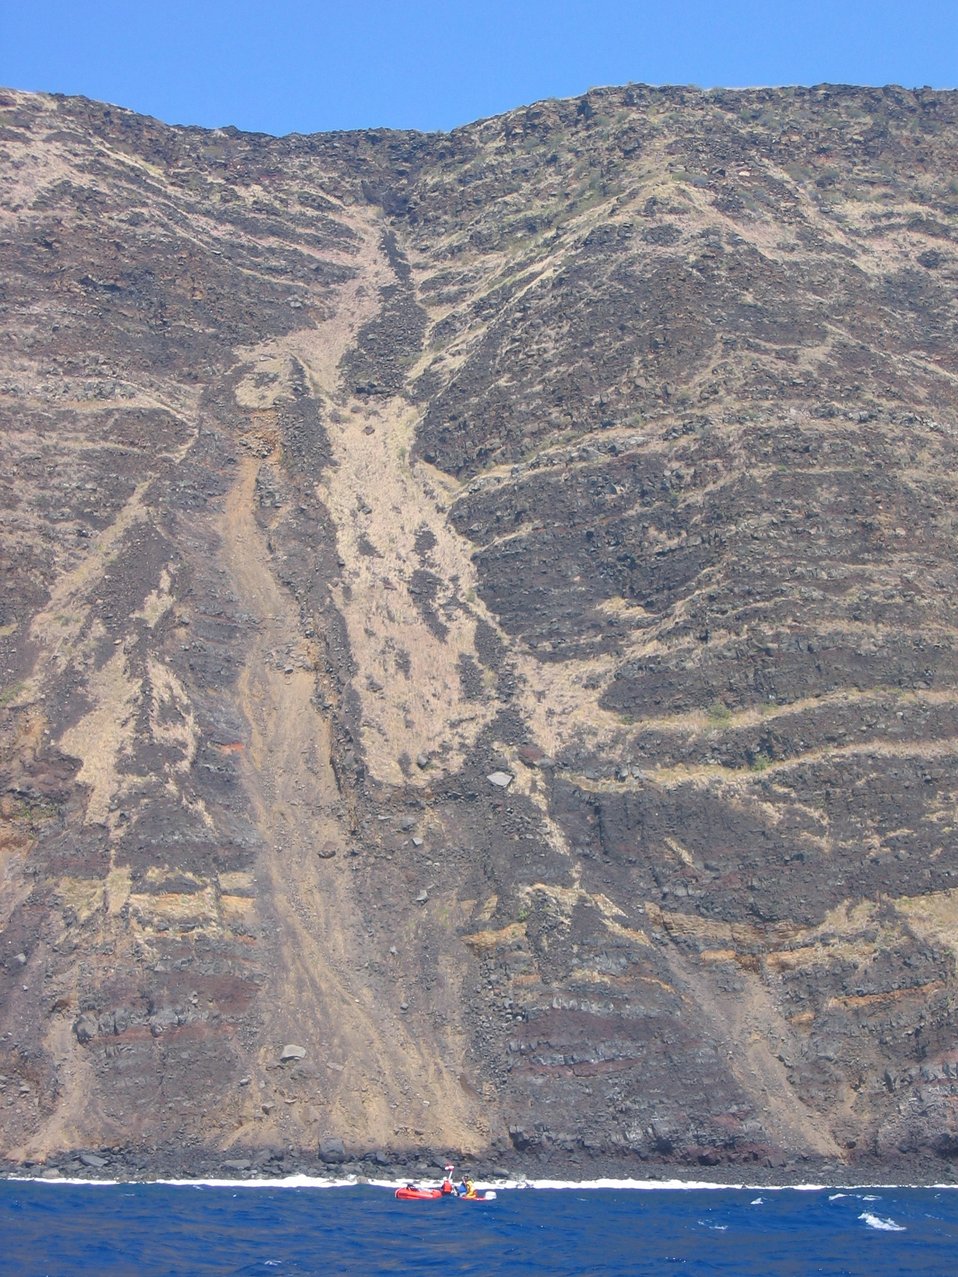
A Safeboat from the NOAA Ship OSCAR SETTE is dwarfed by multiple lava flows forming a cliff on the coast of Hawaii. Boat is towing divers doing reef surveys.